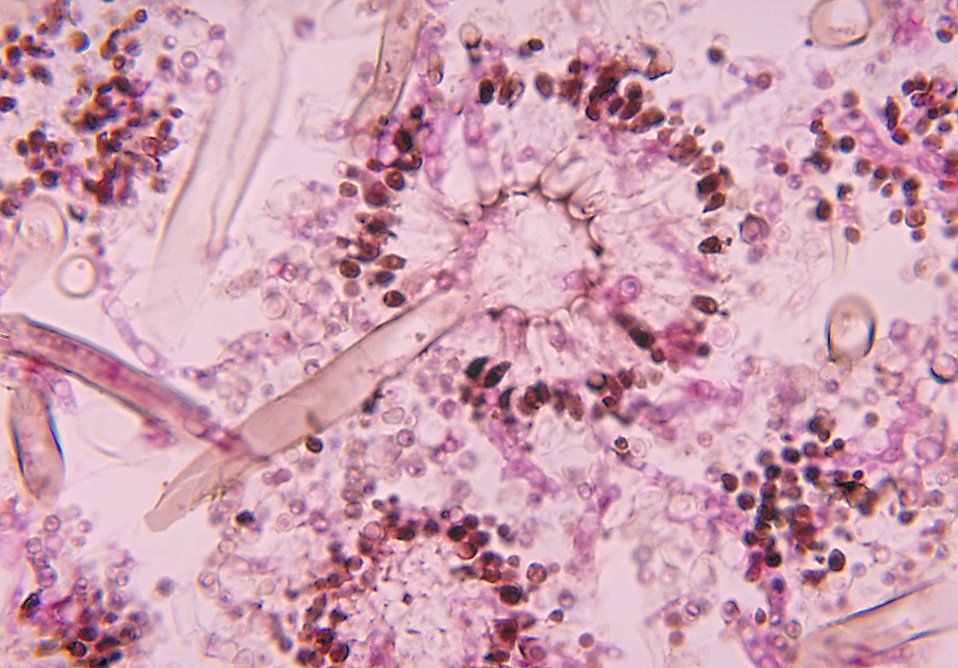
This micrograph depicts the histopathologic features of aspergillosis including the presence of conidial heads.